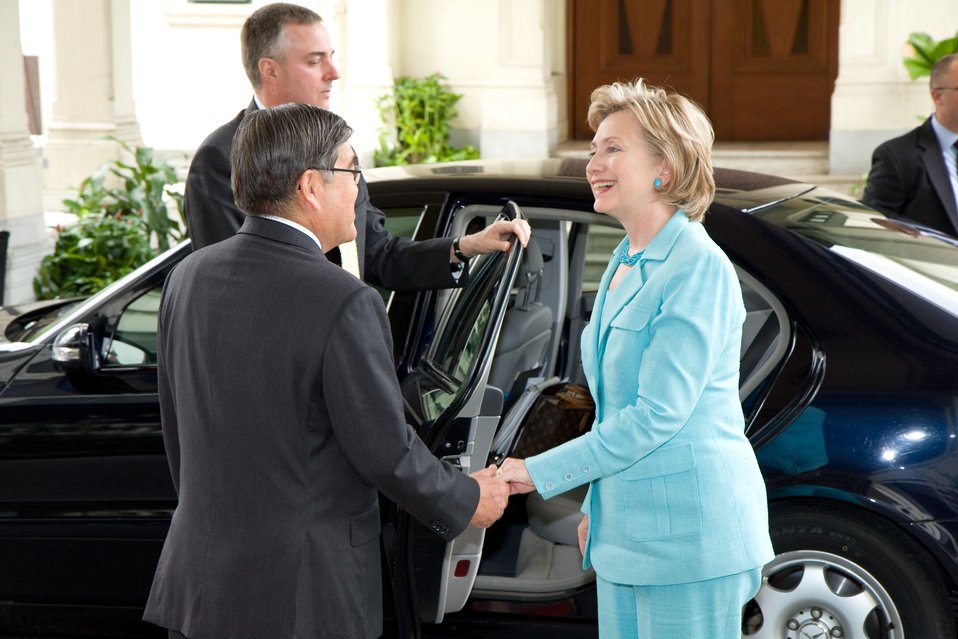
Secretary Clinton Visits Phyathai Palace

U.S. Secretary of State Hillary Rodham Clinton is greeted by Lieutenant General Supriya Mokkhavesa at Phyathai Palace in Bangkok, Thailand July 22, 2009.